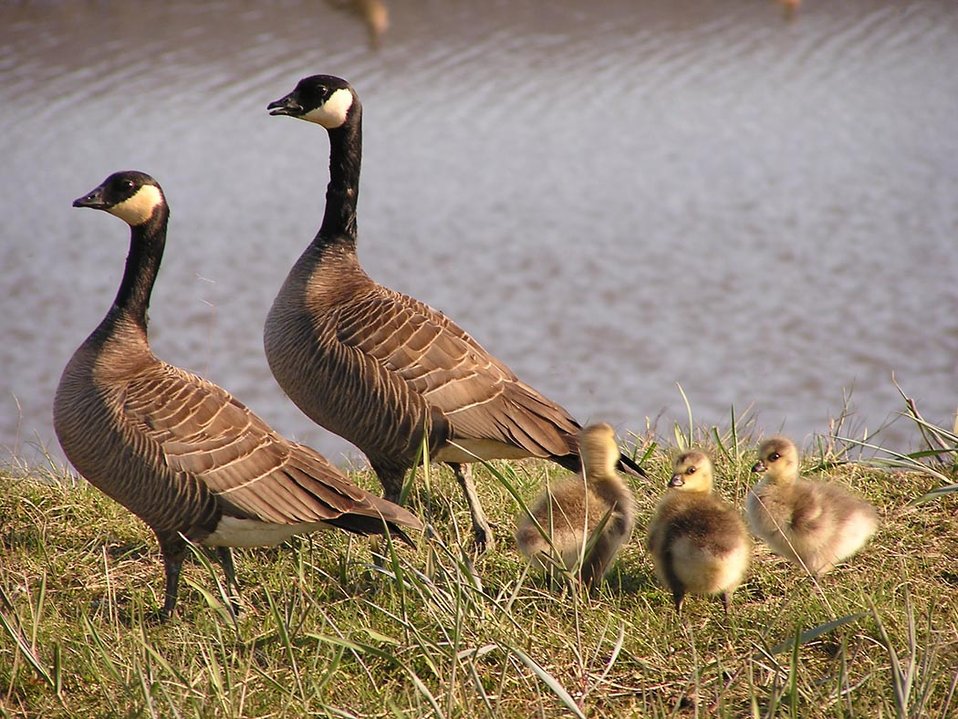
Cackling Canada goose brood.